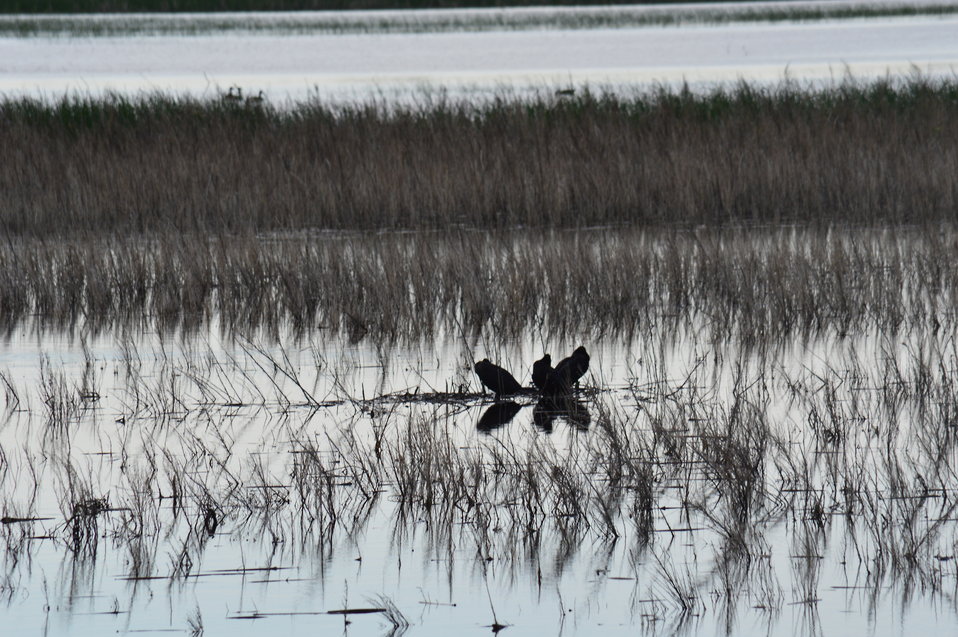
Birds Nesting in Sand Lake

Scenery and wildlife at Sand Lake National Wildlife Refuge in South Dakota